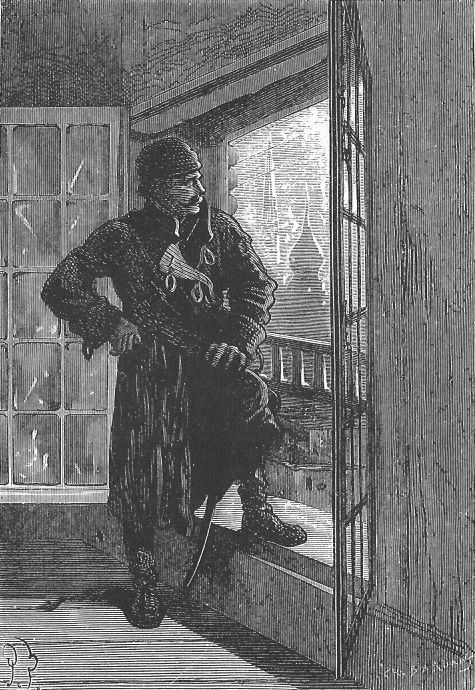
An illustration from the novel 'Michael Strogoff: The Courier of the Czar' by Jules Verne drawn by Jules Férat. Polski: Ilustracja powieści Juliusza Verne'a 'Michał Strogow, kurier carski' autorstwa Julesa Férata. Français : 'Michel Strogoff. Le courier du tzar', Jules Férat. Français : Il attendait donc dans les ténèbres…